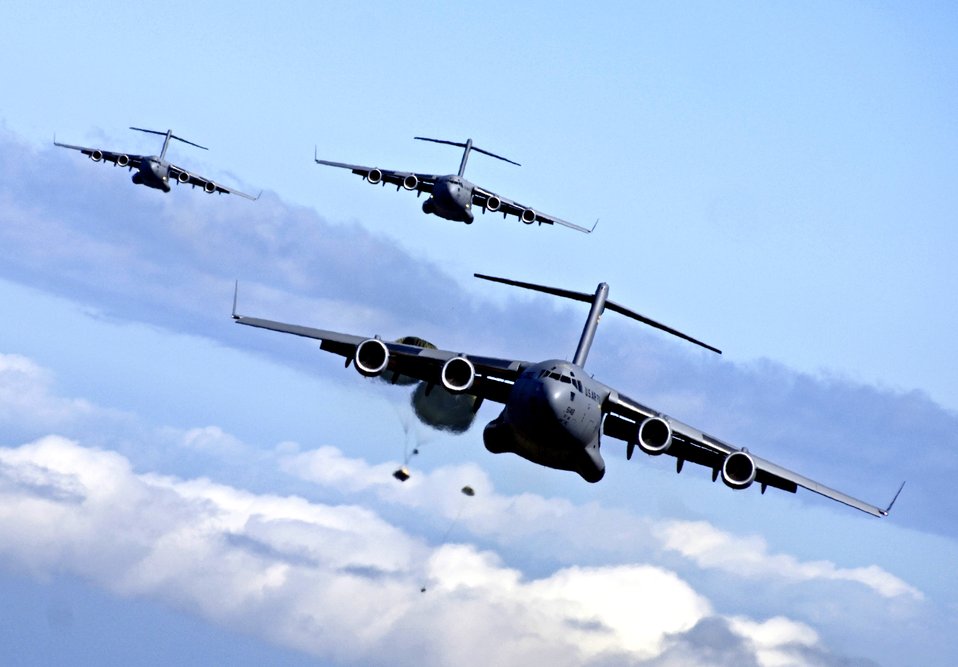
C-17 airdrop training mission

Heavy equipment pallets fall from C-17 Globemaster IIIs May 16, 2006, during an airdrop training mission. The C-17s are from the 535th Airlift Squadron, Hickam Air Force Base, Hawaii and are conducting the training to provide multi-element training for the pilots and maintain aircrew proficiency.